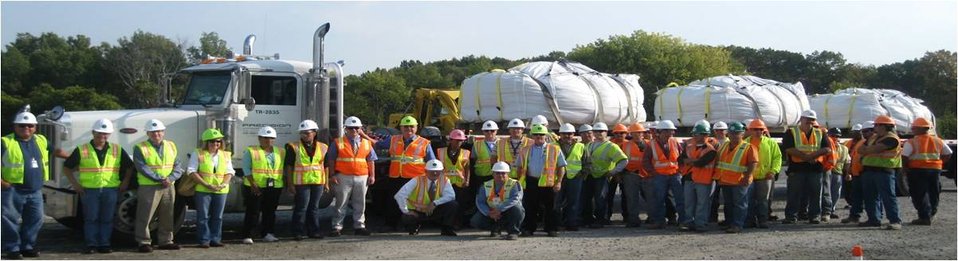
Site Marks Recovery Act Milestone with Contaminated Soil Cleanup

DOE and Accelerated Remediation Company workers gather in front of the final shipment of contaminated soil from North Field at Separations Process Unit on Sept. 22, 2010. The contaminated soil was shipped to a disposal facility in Utah.

The removal of 9,400 cubic yards of contaminated soil in 2010 was completed about $1 million under budget and four years ahead of schedule with the help of $13.8 million from the Recovery Act.